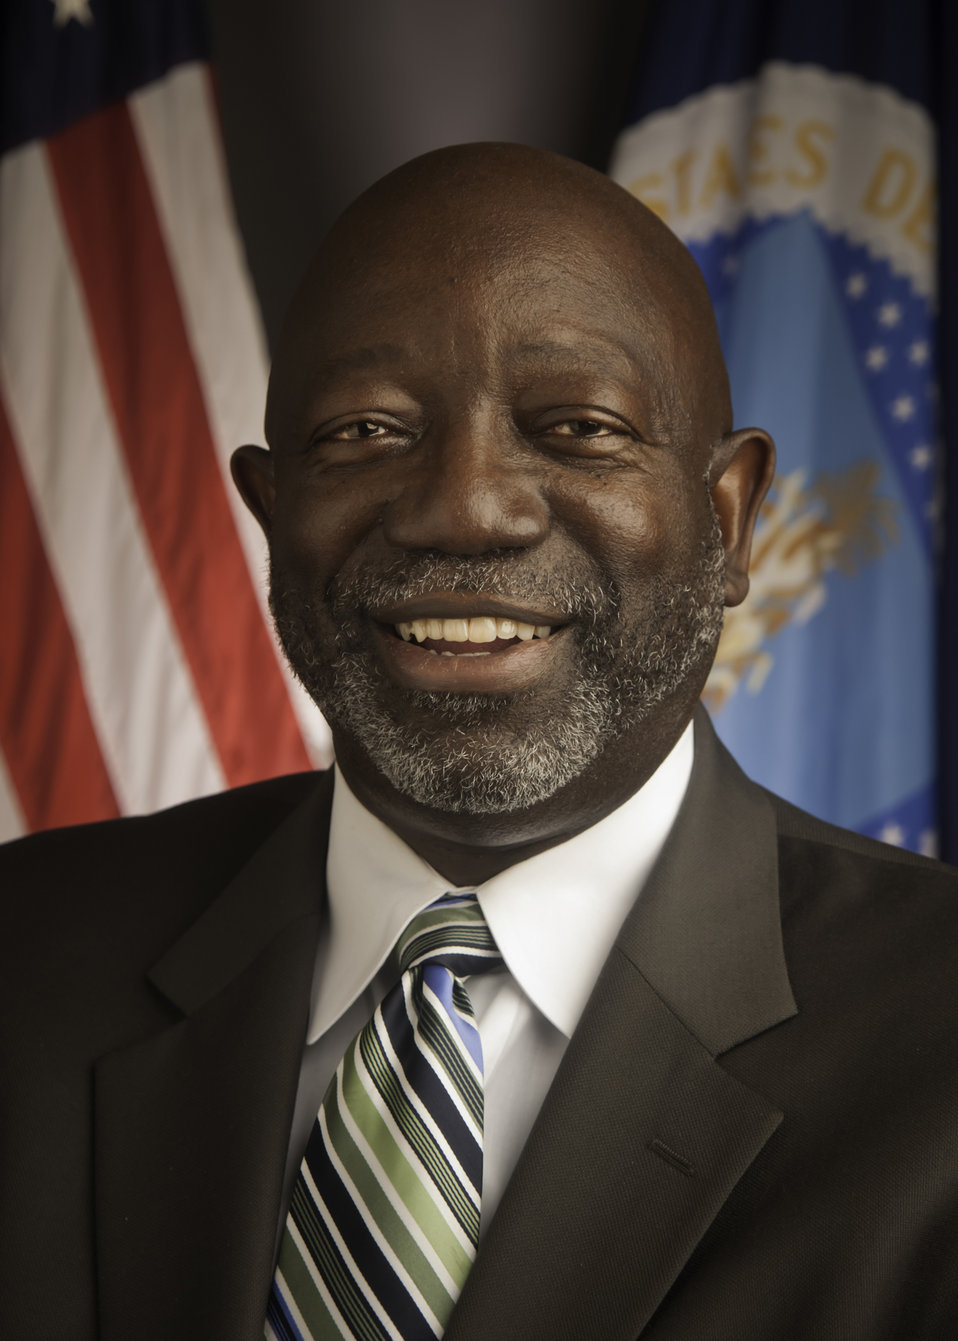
20120823-OCR-RBN-9791 APHIS Director, Office of Civil Rights Kenneth Johnson

Portrait APHIS Director, Office of Civil Rights Kenneth Johnson. USDA photo by
Bob Nichols.